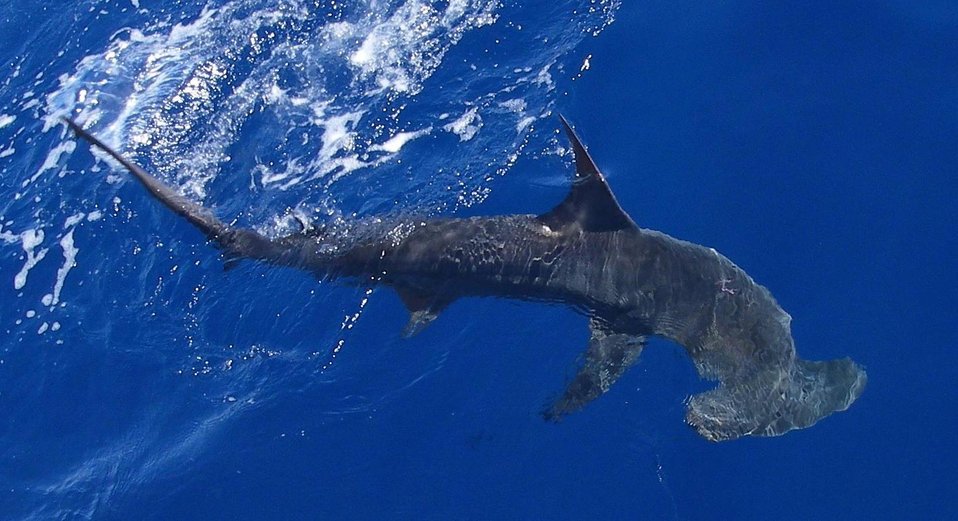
#37B - Breaking News!

Countdown to CoP16: The United States will support proposals at CoP16 to restrict unsustainable levels of international trade on manta rays and five shark species--porbeagle, scalloped hammerhead, great hammerhead, smooth hammerhead, and oceanic whitetip. Populations of the five shark species are declining because of demand for fins for food products such as soup and medicine, while manta rays are being overharvested to meet demand for their gill plates.

Read the press release bit.ly/Y3SuSy

Scalloped Hammerhead. Taken by NOAA.